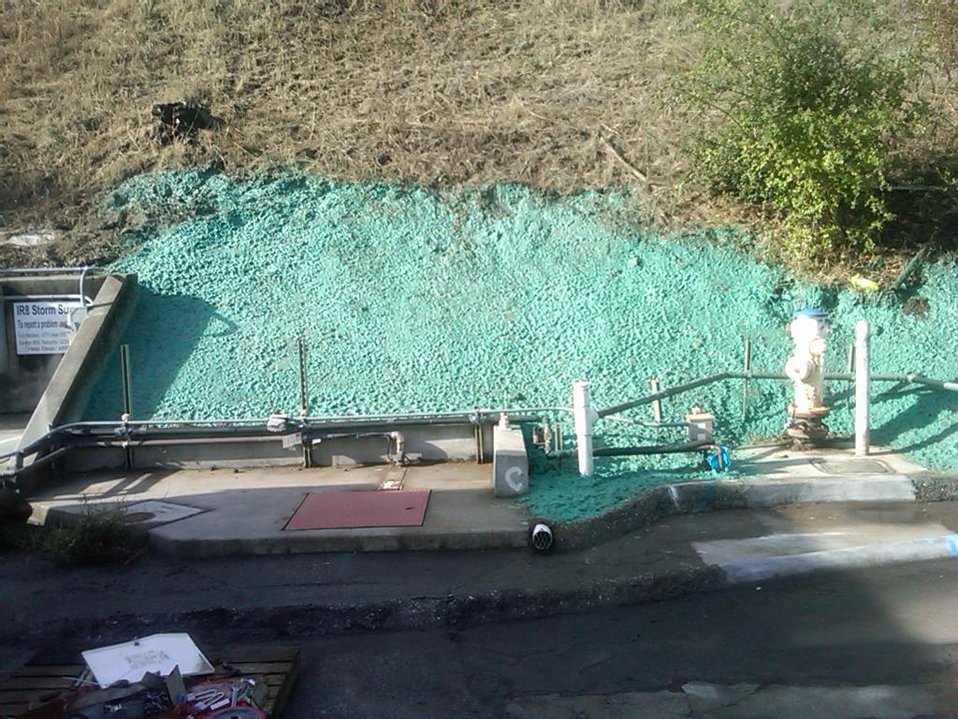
Recovery Act Supports Soil and Debris Cleanup, Groundwater Treatment at SLAC

Recovery Act workers are on track to remove more than 30,000 cubic yards of contaminated soil and debris at the SLAC National Accelerator Laboratory by September 2011.
The Recovery Act invested $14.3 million in legacy cleanup activities at SLAC. In addition to removing contaminated soil and debris that is shipped to local disposal facilities, Recovery Act workers installed three new groundwater treatment systems.